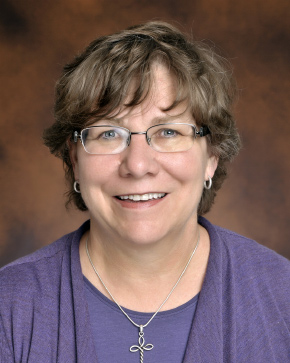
New Member of EM’s Leadership Team Envisions Success Following Reorganization

Alice Williams was named EM’s Associate Principal Deputy Assistant Secretary on Jan. 1. Williams recently talked with EM Update about her role in EM’s new organizational structure, which is based on a matrix construct and facilitates collaborative decision-making around shared goals and objectives. This structure aims to better align the program to achieve success in the Cold War cleanup.